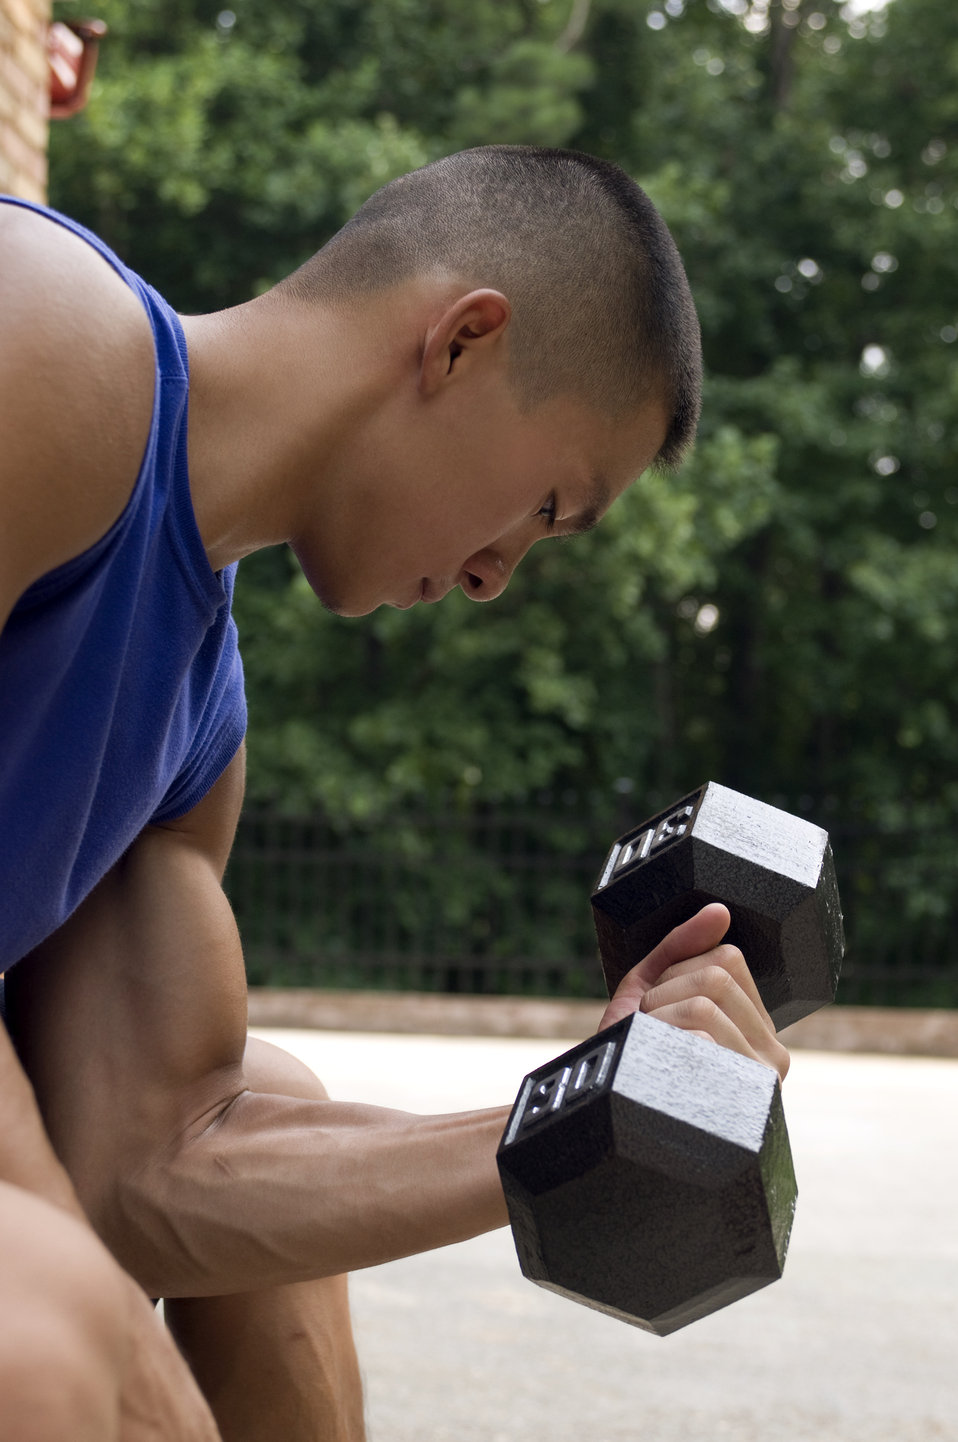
The young man pictured here was seated outdoors as he was in the process of completing an exercise session. At this point in his routine, he was performing a weight training exercise known as a biceps curl, which is intended to build the participant's biceps muscle, as well as the forearm flexors. The weight, in this case a 30Lb dumbbell, is grasped by a closed fist, palm up, and when flexed, the arm lifts the weight up to the shoulder level.